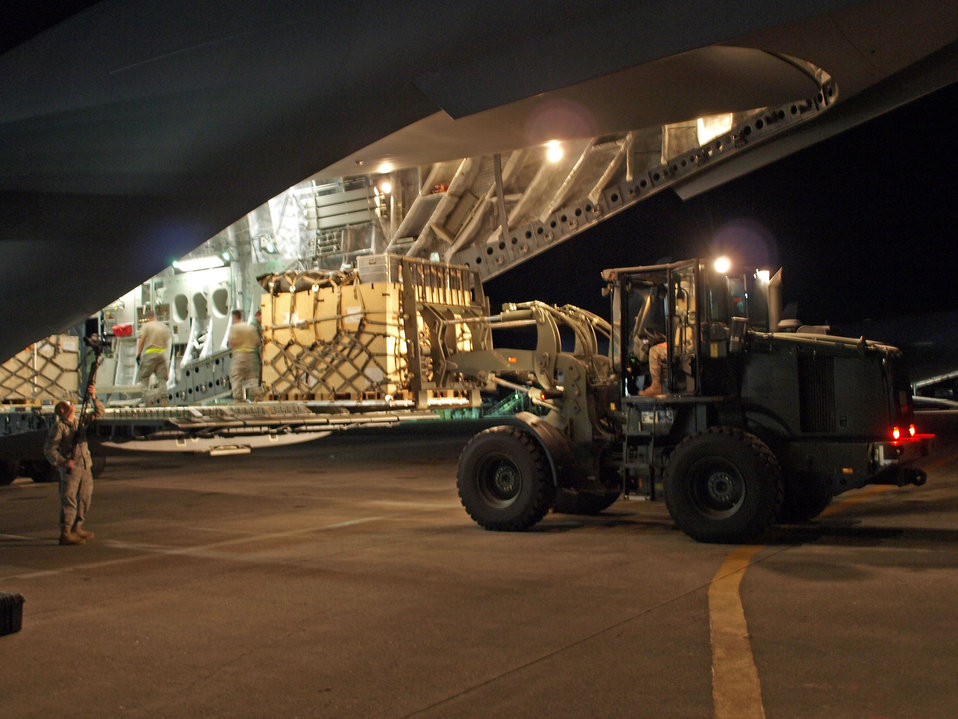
Multinational aid delivered to Haiti

Norwegian air force 1st Lt. Jan Barre Prestbakmo, a loadmaster for the Heavy Airlift Wing out of Papa Air Base, Hungary, gives directions to the pilot as his C-17 transport aircraft backs up in preparation for takeoff from the main airport at Port-au-Prince, Haiti, Jan. 18, 2010. The aircraft and multinational aircrew had just delivered 15 pallets of material to construct a headquarters for aid workers at the airport. The air relief is being delivered in response to a massive earthquake that struck Haiti Jan. 12, 2010. This is the first humanitarian assistance operation flown by the Heavy Airlift Wing since it stood up in July 2009. The wing is a multinational force made up of airmen from 12 nations.